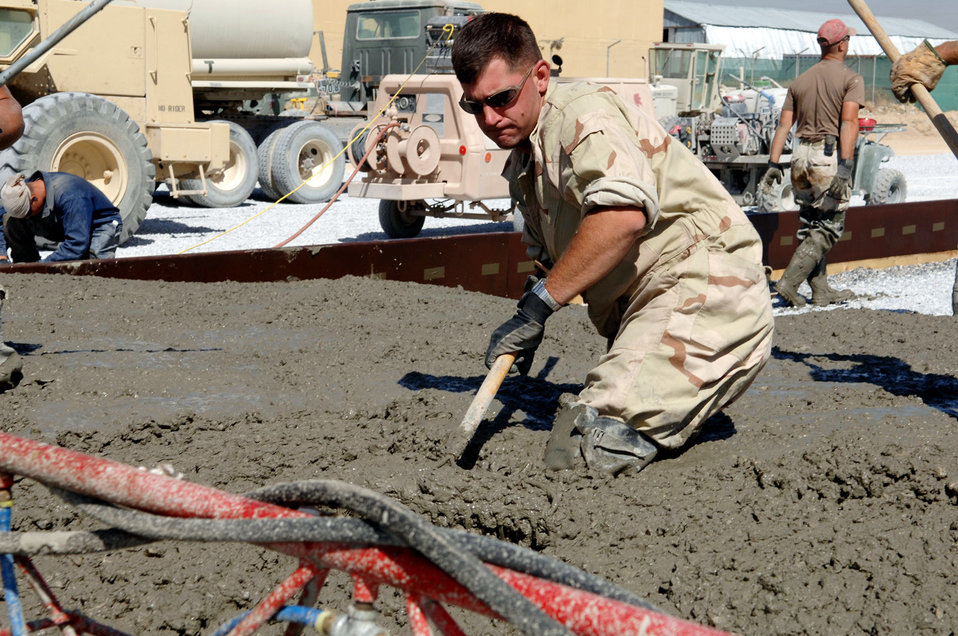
Operation Enduring Freedom

BAGRAM AIR BASE, Afghanistan -- Senior Airman Paul Lefevre spreads freshly poured concrete onto the newest section of the aircraft parking ramp here. The concrete is being used by the 1st Expeditionary Red Horse Group from Nellis Air Force Base, Nev., to add an additional 60,000 square meters of aircraft ramp space as part of a $4.4-million airfield upgrade project. Airman Lefevre is a pavement and heavy equipment operator with the 1st ERHG.